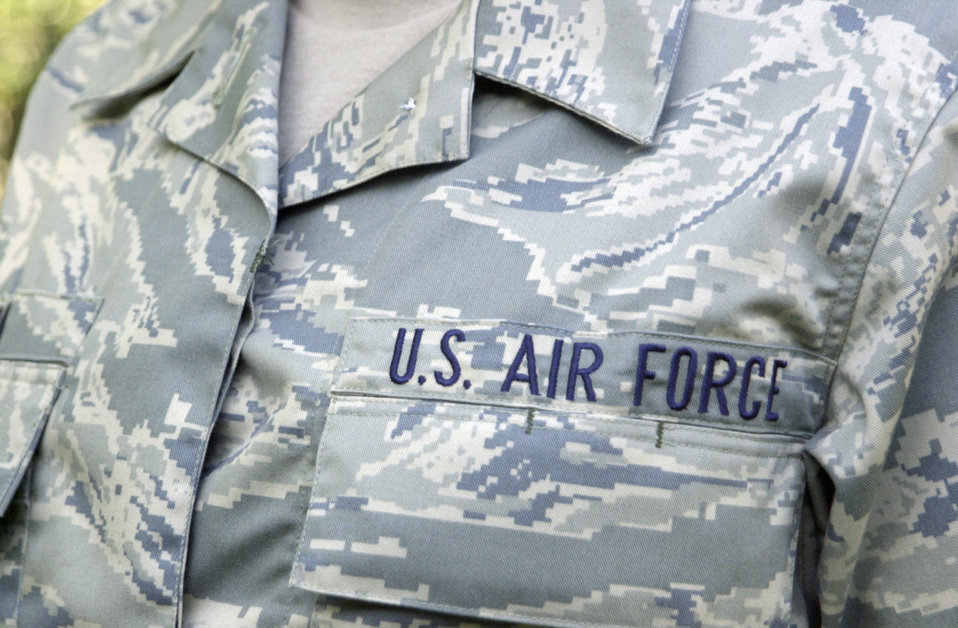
New Air Force utility uniform

WASHINGTON -- Air Force officials released photos of the latest version of the proposed Air Force utility uniform. Special operations and survival, evasion, resistance and escape Airmen will conduct a limited wear test of the new design at Eglin Air Force Base, Fla., Hurlburt Field, Fla., and Fairchild AFB, Wash., in June.